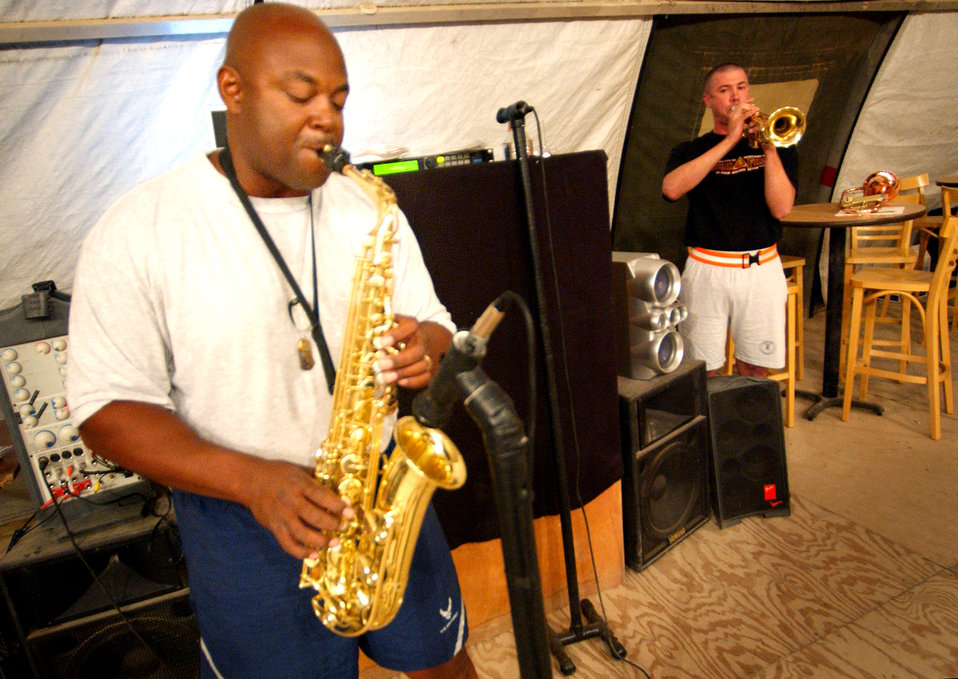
Jazz night in Baghdad be-bops with Airmen's notes

BAGHDAD, Iraq -- Master Sgt. Rosmon Johnson and Maj. Donald Baker play for the crowd on jazz night. Sergeant Johnson is a heating, ventilation and air conditioning craftsman deployed from Scott Air Force Base, Ill. Major Baker is the wing safety officer here.